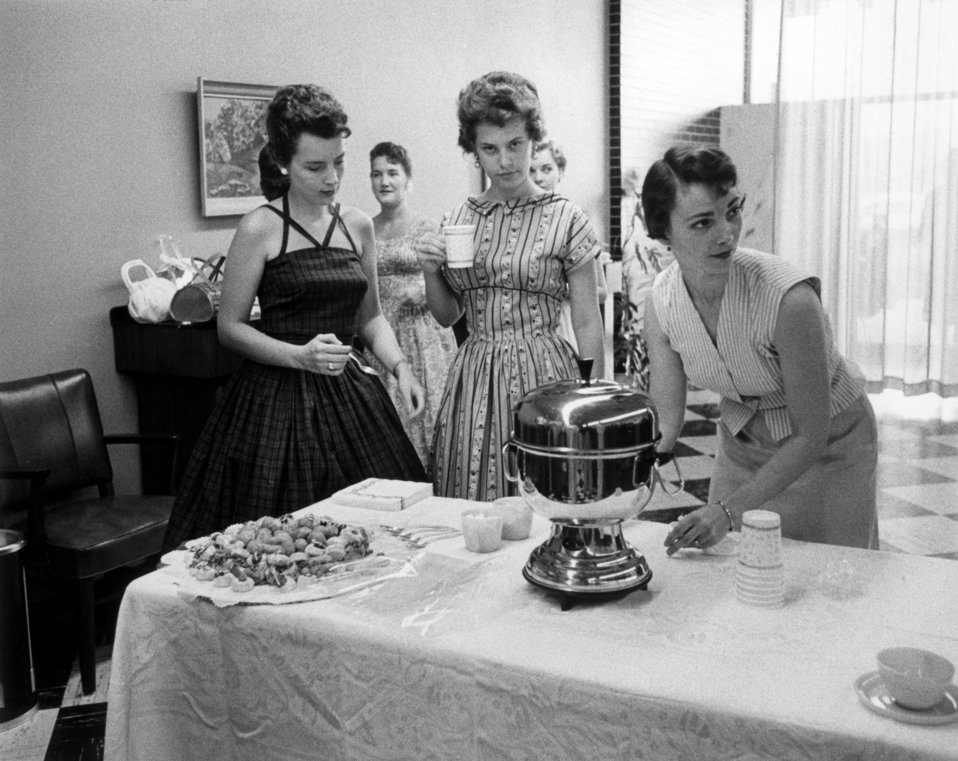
Municipal Bldg. ground breaking ceremony Oak Ridge

57-0850-28 DOE photo by Ed Westcott

Municipal Bldg. ground breaking ceremony Oak Ridge Tennessee 6-19-1957